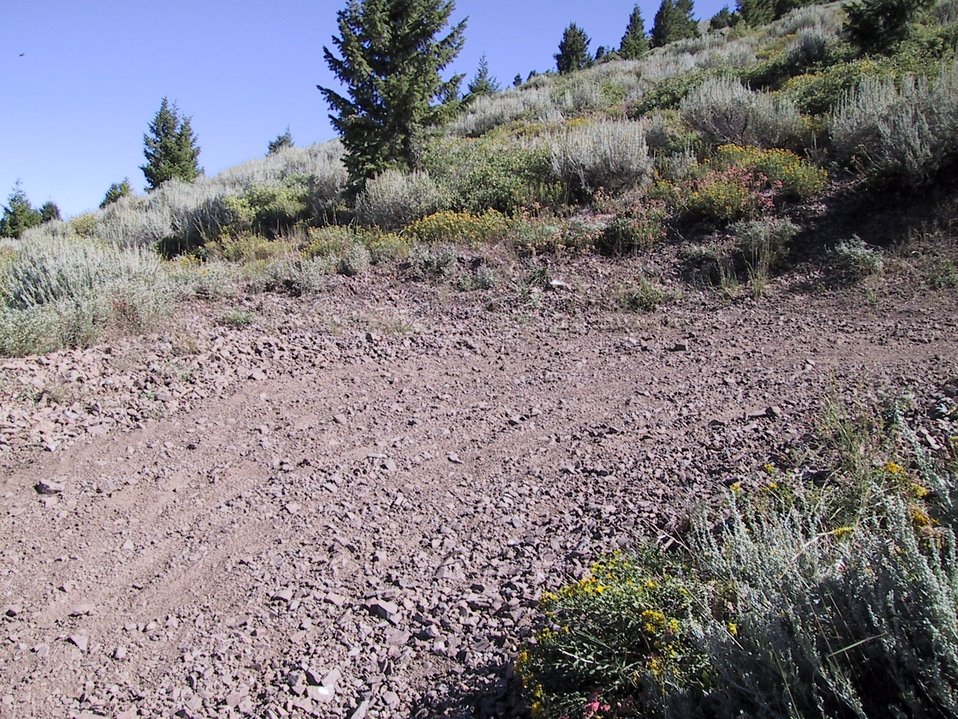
Blaine County Trails Shoshone Field Office USRD Upper Snake River District